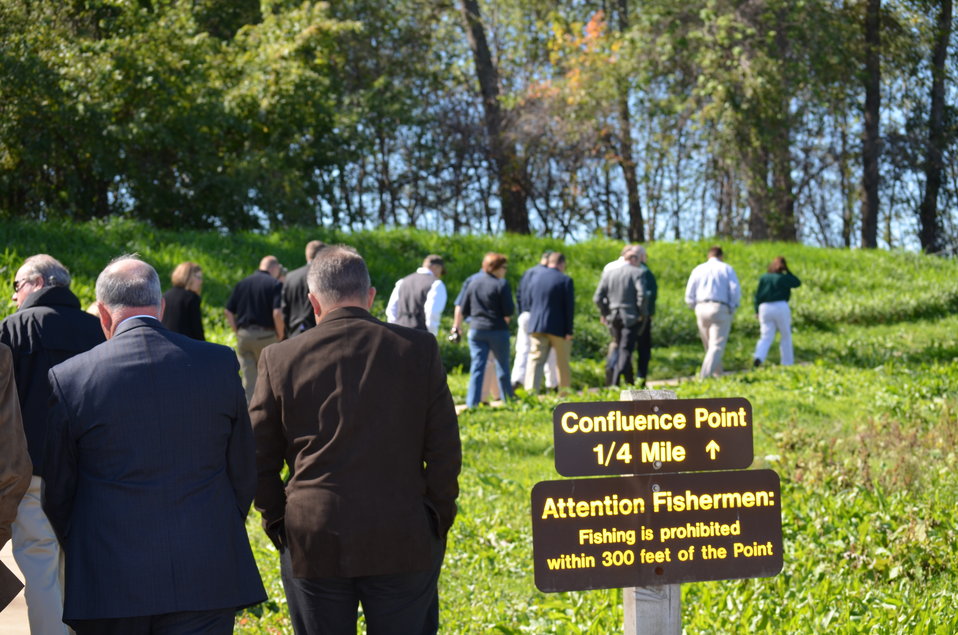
A walk in the park

Heading to the confluence overlook point at Edward 'Ted' and Pat Jones Confluence Point State Park. USFWS/Ashley Spratt